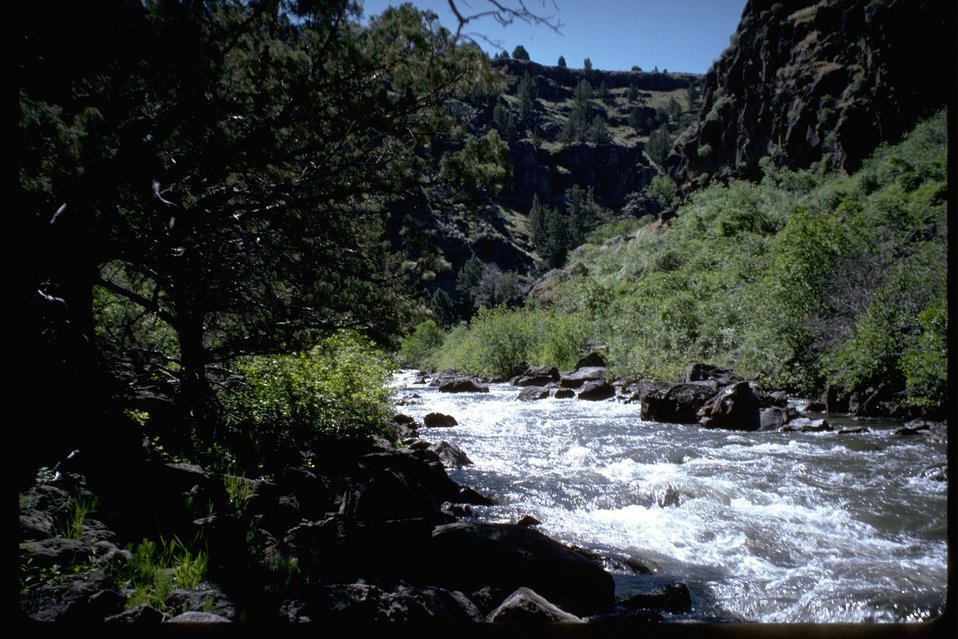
Donner und Blitzen wild and scenic river riparian area and Redband Trout habitat.